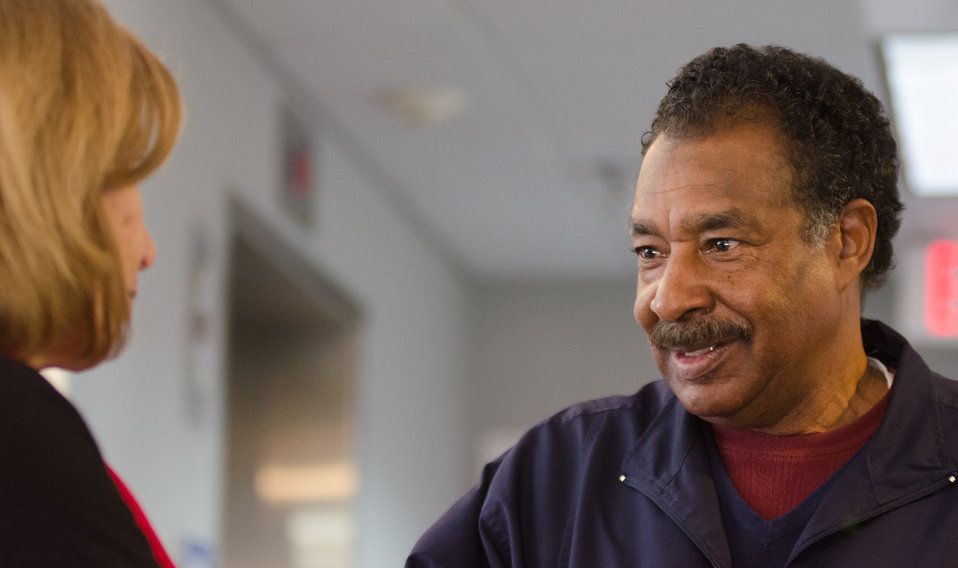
U.S. Department of Agriculture (USDA) Natural Resources Conservation Service (NRCS) Outreach to Under-Served Customer Public Affairs Specialist Pat Paul, left, helped farmers participating in the “Virginia State University (VSU), USDA and Virginia Farmers Working Together” outreach workshop in the VSU, L. Douglas Wilder building on Thursday, March 7, 2013, in Petersburg, VA. Farmers shared and learned new ways to do more with USDA services, and how to apply for programs that will help grow their business.